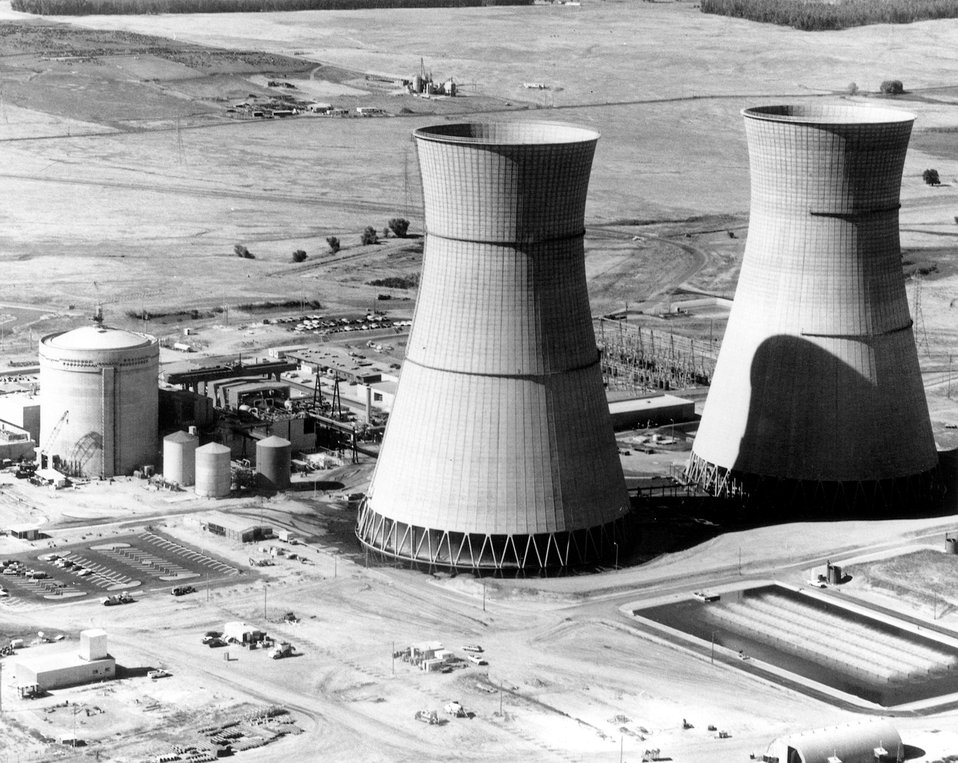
Rancho Seco Nuclear Generating Station, Unit 1, near Clay Station, California.